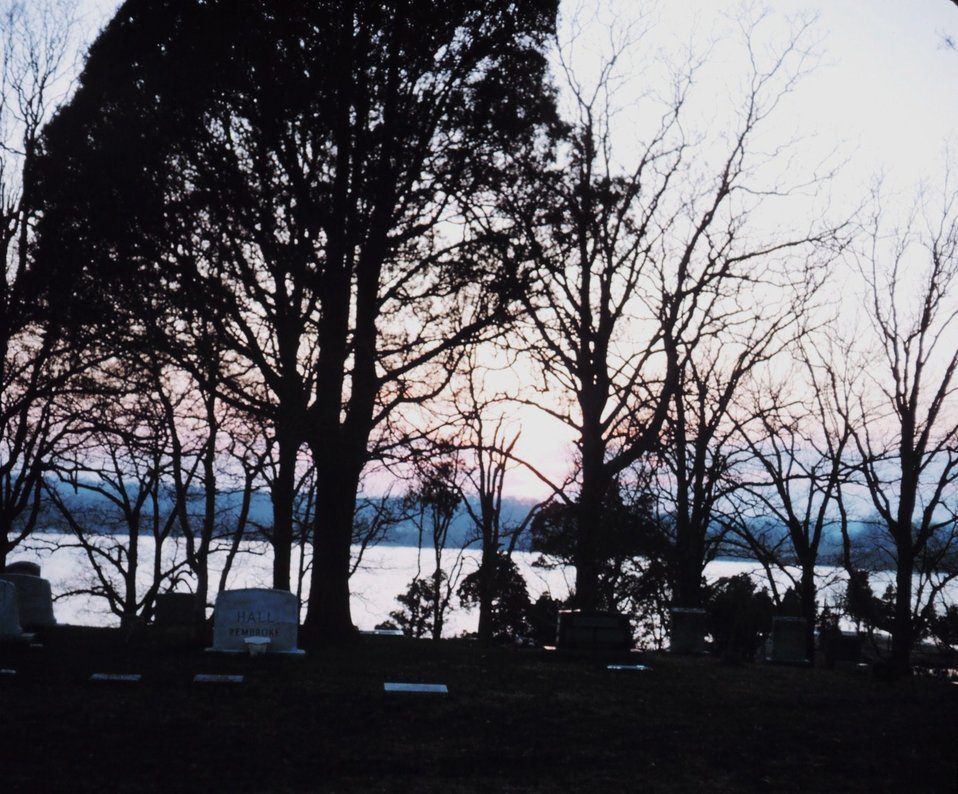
Overlooking the St. Mary's River from the graveyard at St. Mary's City. St. Mary's City was the first capital of Maryland.